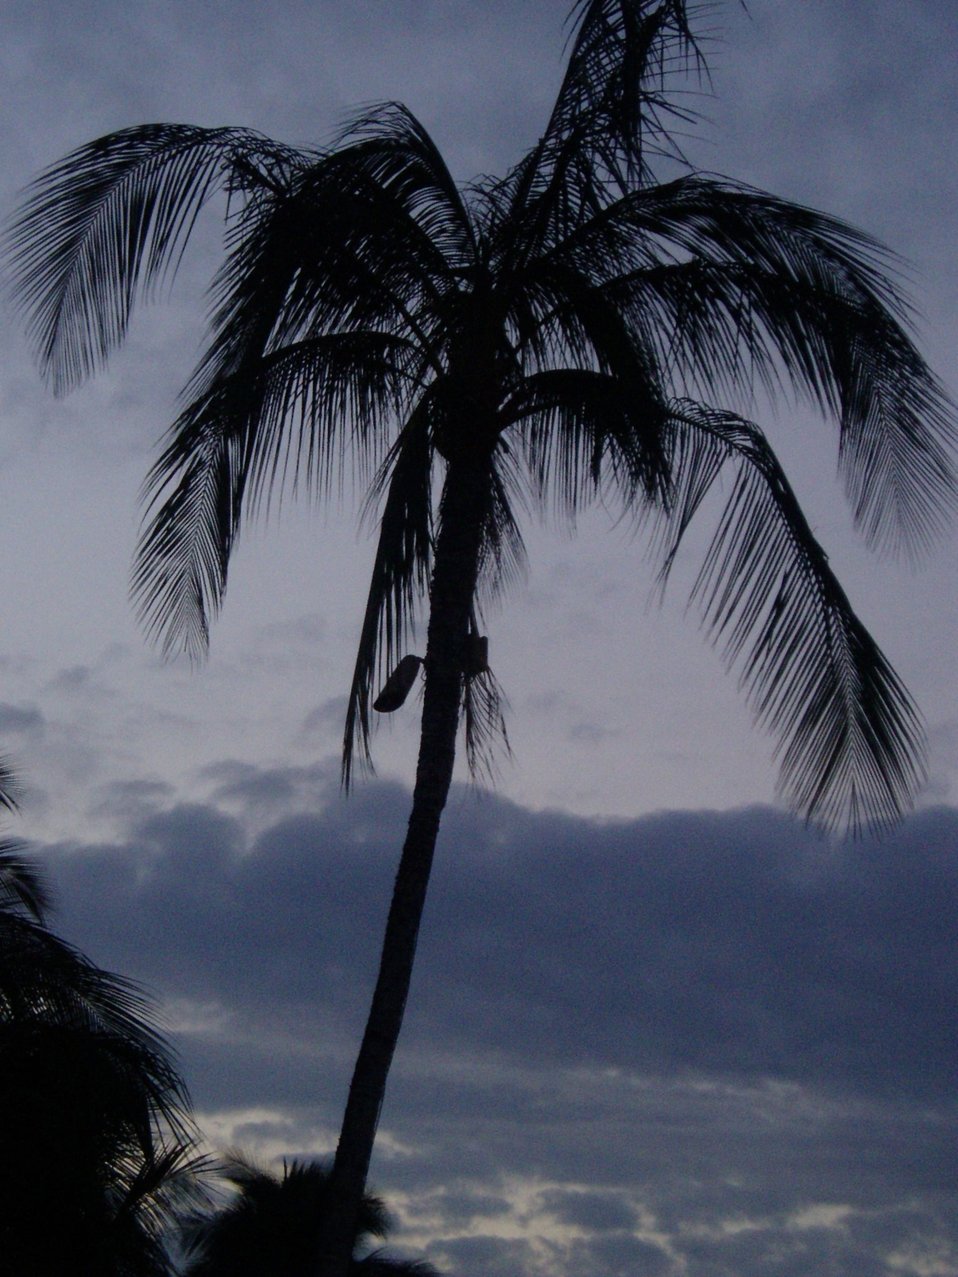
A palm tree silhouetted at dusk.